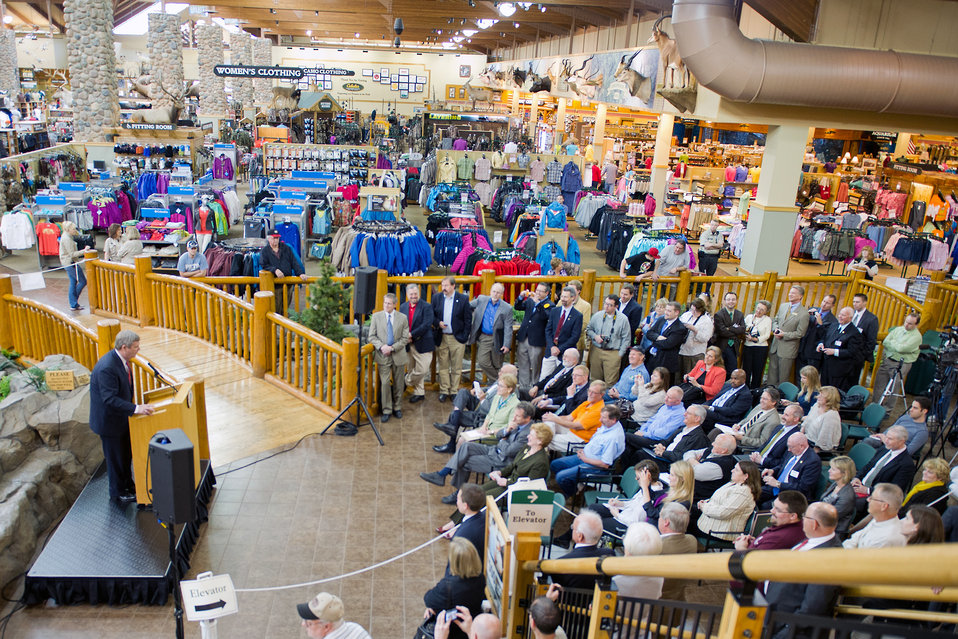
Agriculture Secretary Tom Vilsack highlighted the U.S. Department of Agriculture's conservation work at a Cabela's store in Dundee, MI, on March 16, 2012 .